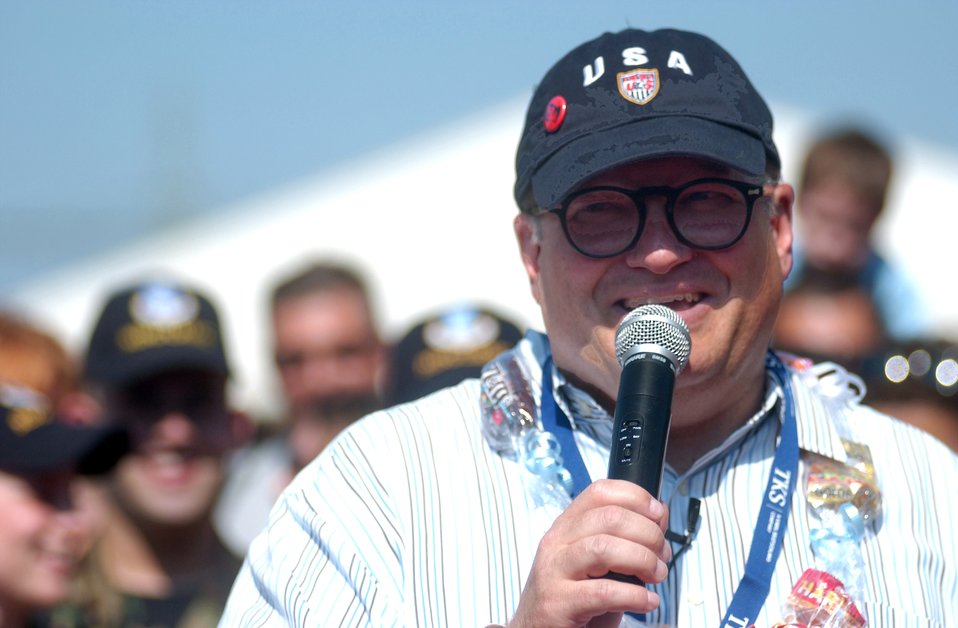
Hometown crowd roots for U.S.A.

Drew Carey talks to the crowd at the World Cup Fest at Pulaski Park in Kaiserslautern, Germany, on Saturday, June 17. The comedian, actor and Marine Corps veteran was here covering the U.S. soccer team for a show on the Travel Channel.